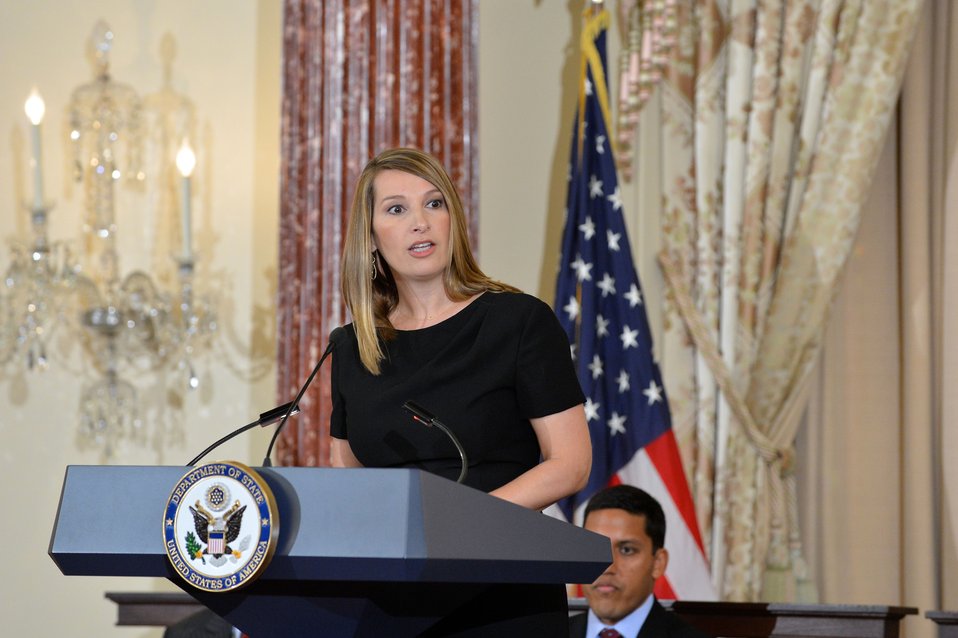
Deputy Secretary Higginbottom Delivers Remarks at the QDDR Launch

Deputy Secretary of State for Management and Resources Heather Higginbottom delivers remarks at the public launch of the Department of State and U.S. Agency for International Development (USAID) review process for the second Quadrennial Diplomacy and Development Review (QDDR) at the U.S. Department of State in Washington, D.C., on April 22, 2014. The Deputy Secretary is joined by U.S. Secretary of State John Kerry, USAID Administrator Raj Shah, and Special Representative for the QDDR Tom Perriello.